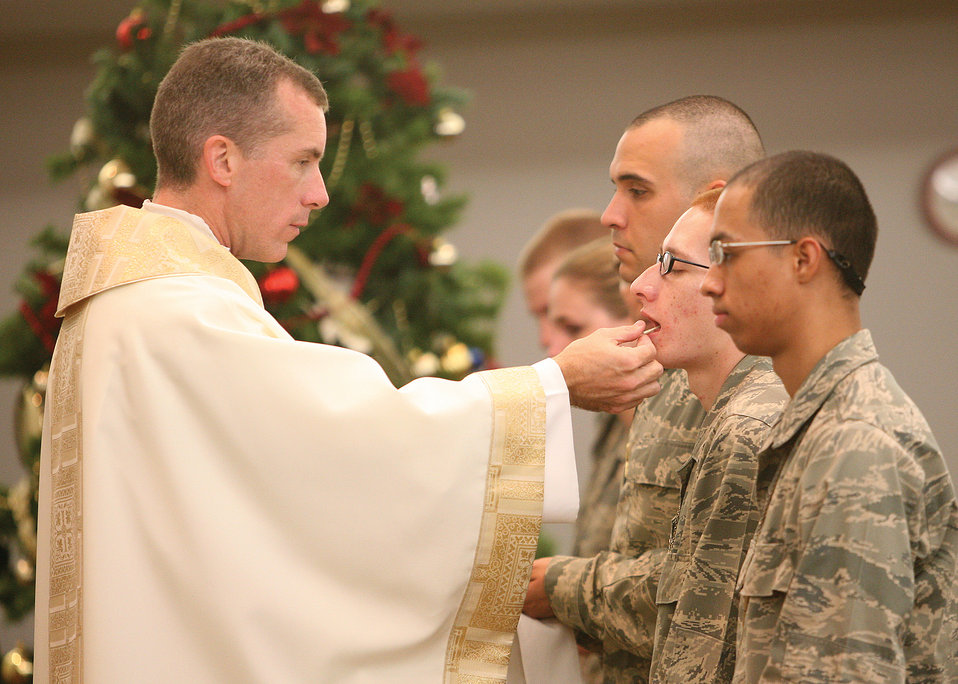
Air Force chaplains

In 2008, Air Force chaplains performed more than 147,000 counselings, provided more than 50,000 worship observances and conducted more than 28,000 religious rites and observances for Airmen and their families.